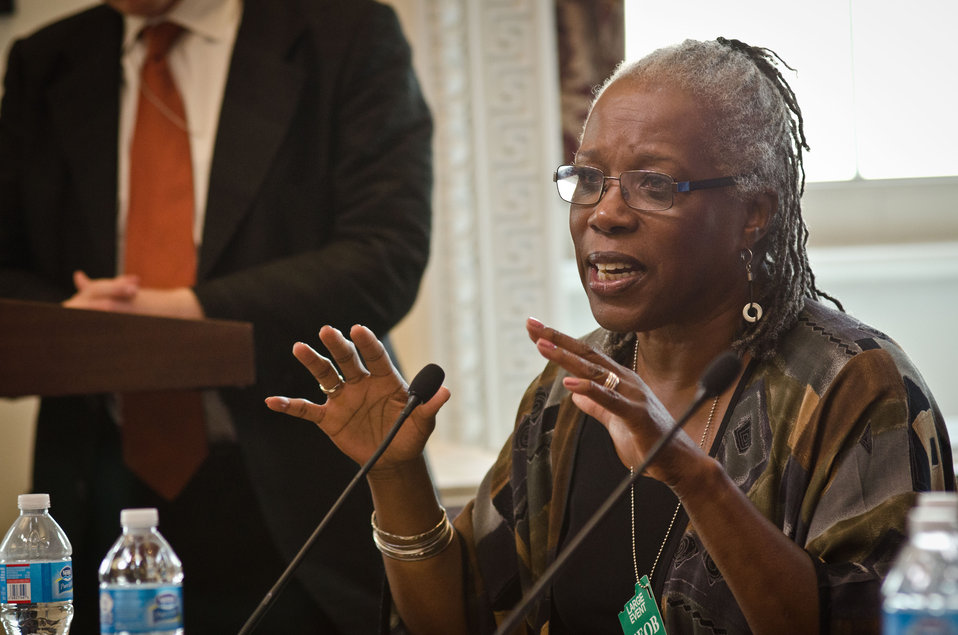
U.S. Department of Agriculture (USDA) Food and Nutrition Service (FNS) Administrator Audrey Rowe moderated the panel of honorees whos work focuses on domestic hunger efforts to reduce hunger and increase food security in the U.S. at the White House Champions of Change Strengthening Food Security at Home and Abroad Event held at the White House on Thursday, September 6, 2012, in Washington, D.C.